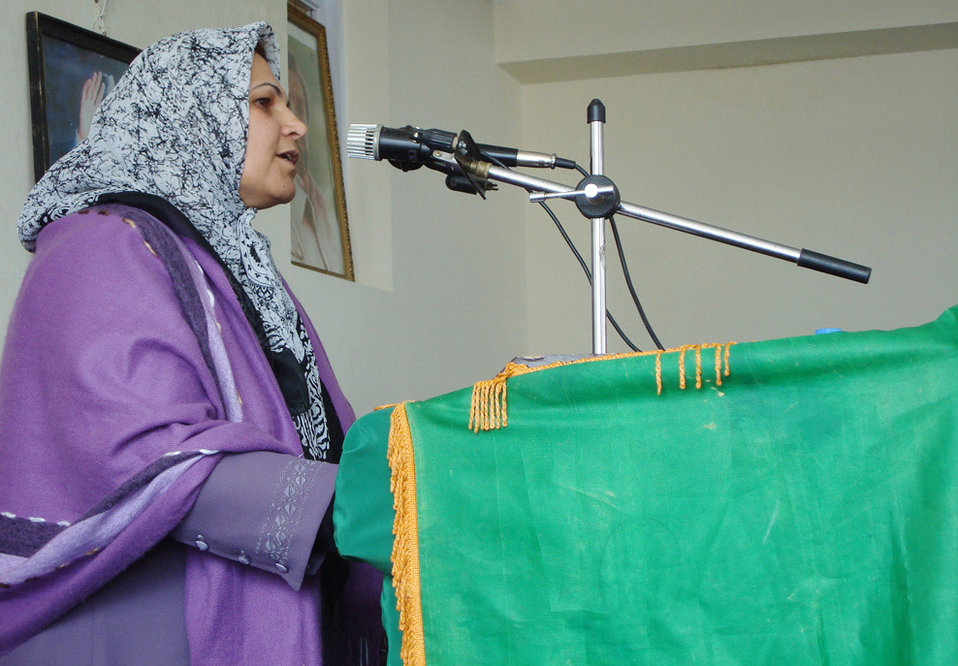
Afghan women celebrate culture at Women's Day event

Former judge Rahila addresses the crowd at the International Women's Day celebration March 8 in Pajshir province's Bazarak district of Afghanistan.